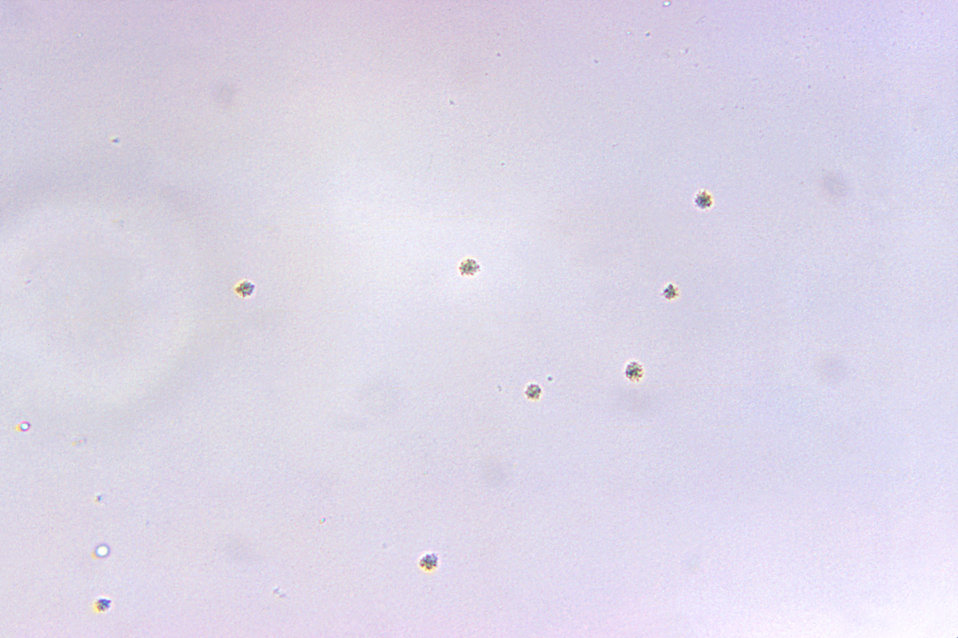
Magnified 125X, this photograph revealed some of the morphologic features exhibited by a number of medium-sized Ureaplasm urealyticum colonies, otherwise known as T-strain mycoplasma. These organisms produced heavy growth on 1ml agar.